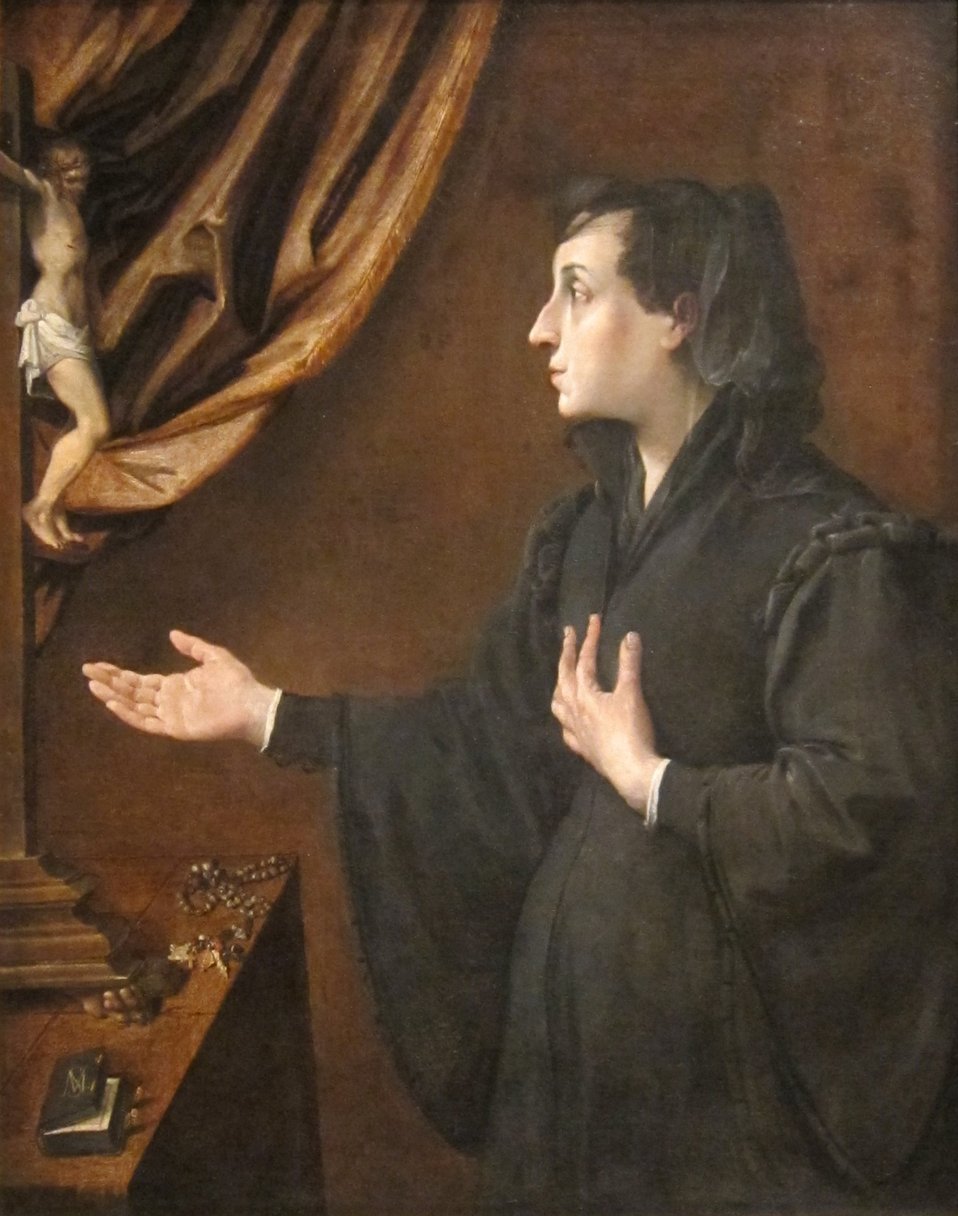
Portrait of a Widow, oil on canvas painting by Ludovico Carracci (Lodovico Carracci), c. 1585, Dayton Art Institute